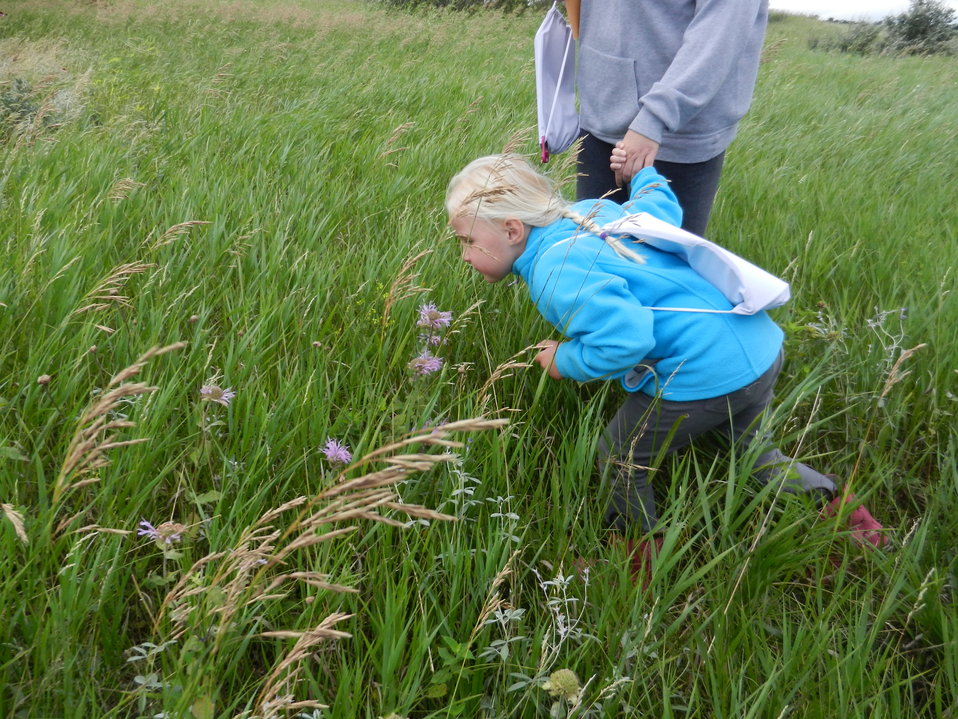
Young Girl Smells Flowers

This young hiker is taking in the moment by smelling the fragrant flowers while on a guided hike at Des Lacs National Wildlife Refuge.